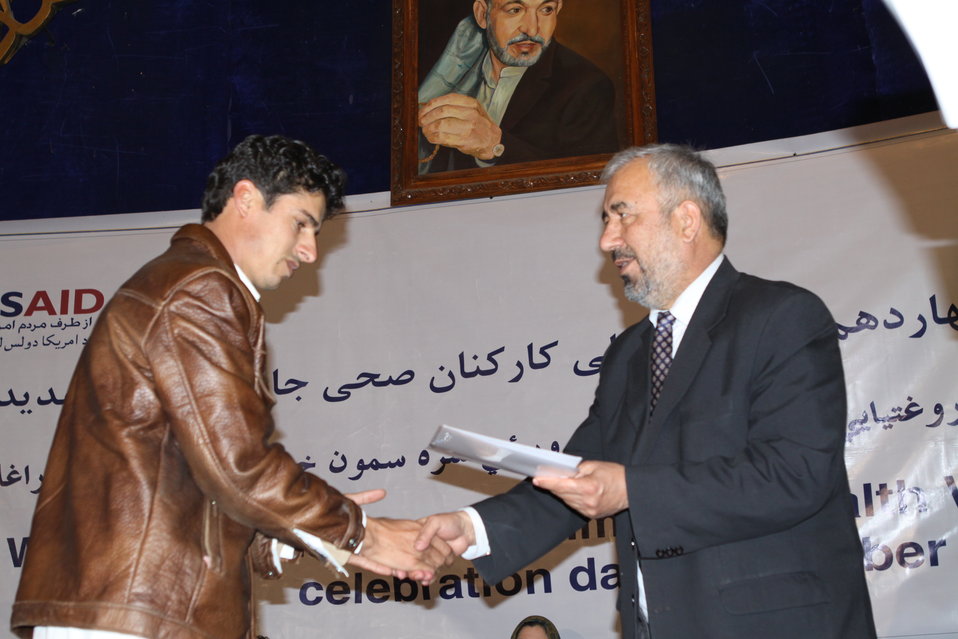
Community Health Workers Celebrated

Kabul, Afghanistan | December 5, 2010 — In support of the United Nations designated International Volunteer Day for Economic and Social Development, Afghanistan’s Ministry of Public Health celebrated its annual Community Health Worker Day today. Acting Minister of Public Health Dr. Suraya Dalil, USAID Senior Deputy Mission Director Robert Hellyer, other government officials, and international donors joined in recognizing the critical contribution of community health workers in Afghanistan and encouraging them to continue their voluntary support to their communities.
The event praised the contributions of the more than 22,000 volunteers throughout the country who deliver community level health-education, counseling, and services out of village health posts located in private homes. The Ministry of Public Health envisioned that community-based healthcare programs will actively encourage communities and families to adopt healthy lifestyles and behaviors, and provide families access to high quality and socially acceptable preventative medicine and life-saving services.
“We have 22,000 community health workers in Afghanistan that are able to implement the basic and standard medicines. They all have been trained through a job description,” said Minister Dalil. Addressing the health workers, she added, “I am proud and feel powerful that I have people like you.”
USAID-funded health projects collaborate closely with the Ministry of Public Health to improve the health and nutritional status of Afghans, provide quality primary healthcare, and promote healthy behaviors at the community and household-levels. USAID supported the training of more than 9,000 of the volunteer community health workers currently working in Afghanistan.
“On behalf of the American people, I congratulate the Community Health Workers for their diligence to gain the skills and knowledge necessary to serve their communities in this important role,” said USAID Senior Deputy Mission Director Hellyer. “USAID strongly supports community based health care and believes that quality community-based health services are essential to reaching Afghanistan’s Millennium Development Goals.”
To support the Basic Package of Health Services, USAID assisted in developing the community health worker training manual, helped train community health worker supervisors and master-trainers, facilitated in-service training, and produced and developed reporting tools, job aids, and education materials.